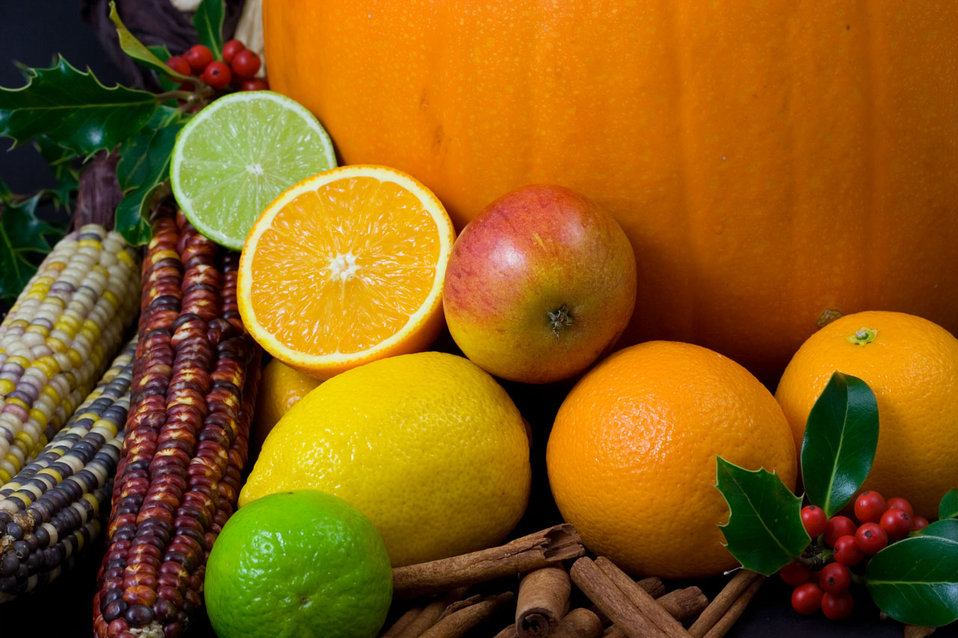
Autumn fruits

Various fruit (oranges, limes, corn, pumpkin, apple).